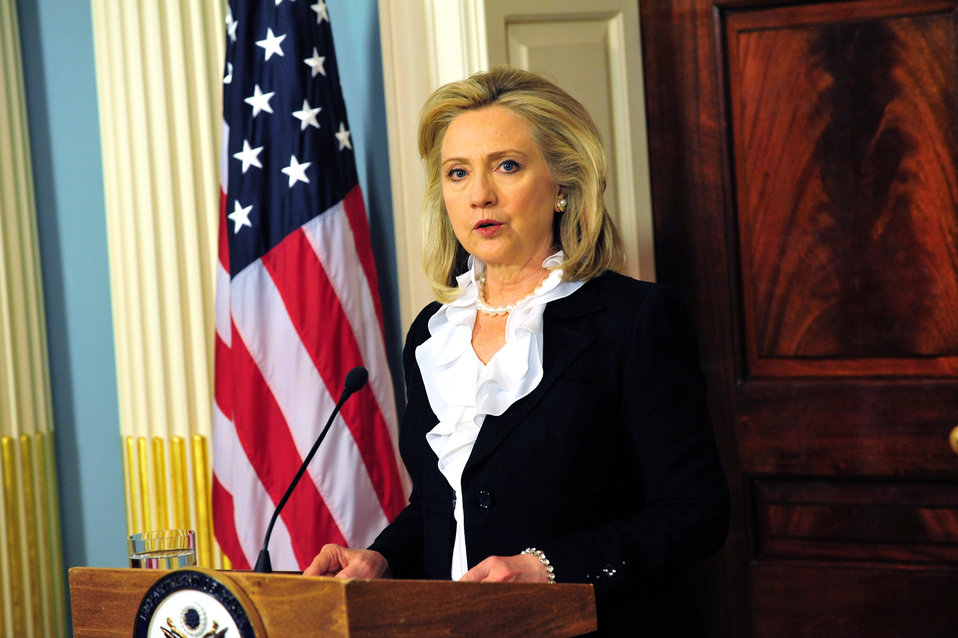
Secretary Clinton Delivers a Statement on Syria

U.S. Secretary of State Hillary Rodham Clinton delivers a statement on Syria, at the U.S. Department of State in Washington, D.C., on August 18, 2011.